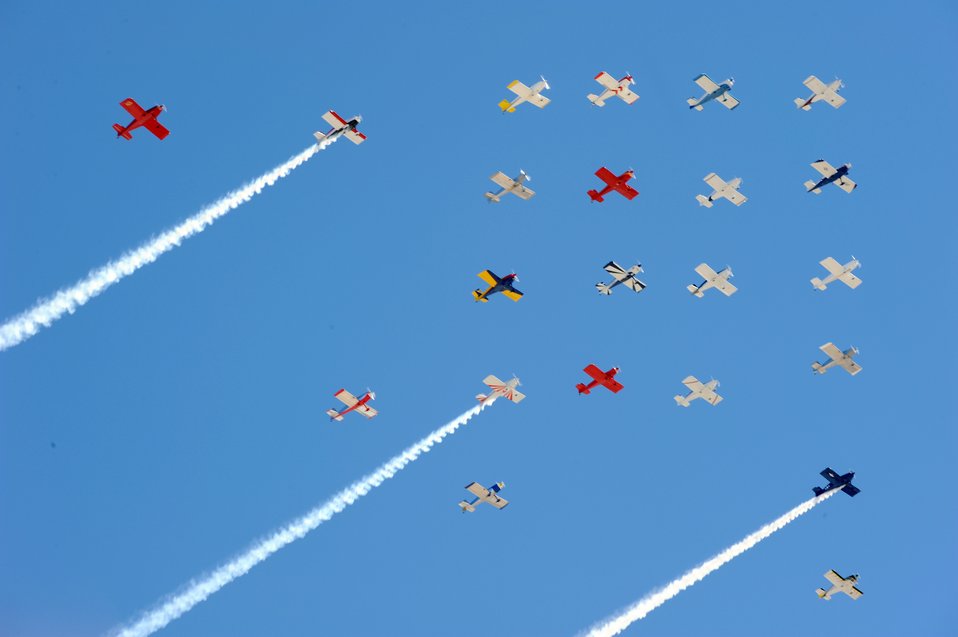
Get into position

Trainer aircraft from various time periods create a colorful formation during the 2010 air show at Nellis Air Force Base, Nev., Nov. 13, 2010. The open house is an opportunity for the Las Vegas community to view aerial demonstrations and static displays of various aircraft from the military.